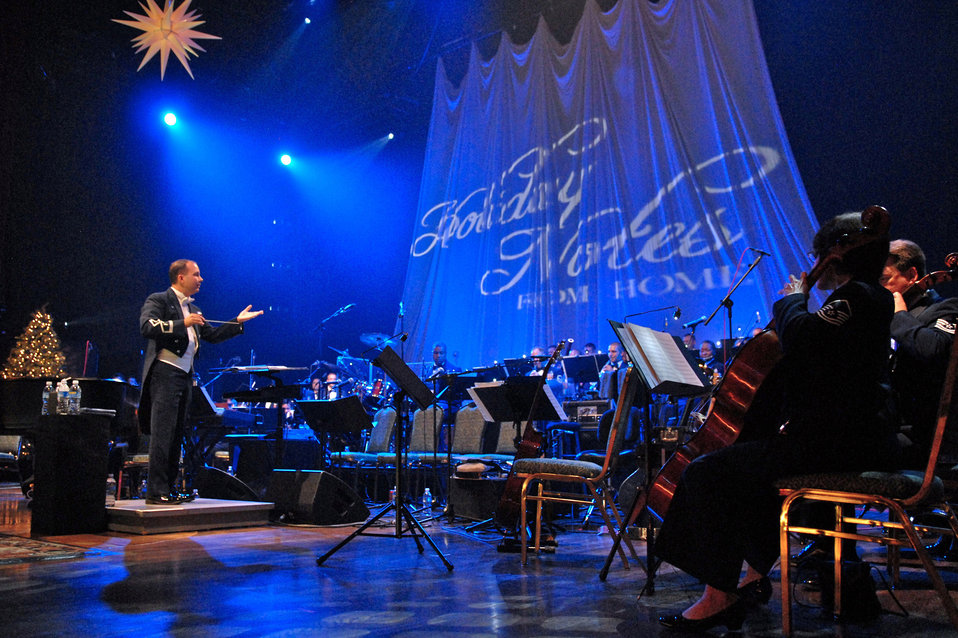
Ready, a-one and a-two!

Maj. Don Schofield leads the Band of the Air Force Reserve and Air Force Strings during the 2008 Holiday Notes from Home concert at the Grand Ole Opry House in Nashville, Tenn. The concert is annual holiday event as a tribute to the military. Major Schofield is the commander of Band of the Air Force Reserve.